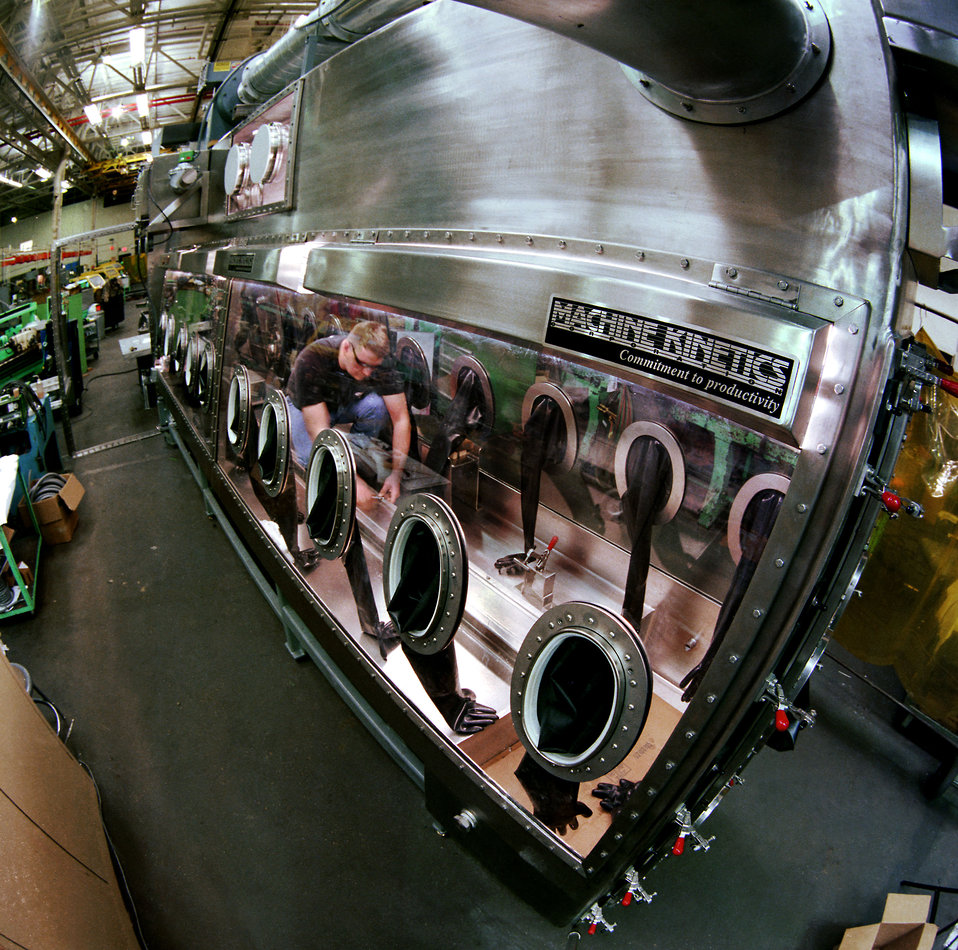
Glove box East Tennessee Technology Park

99-0027 DOE photo by Lynn Freeny
Oak Ridge Tennessee 1999